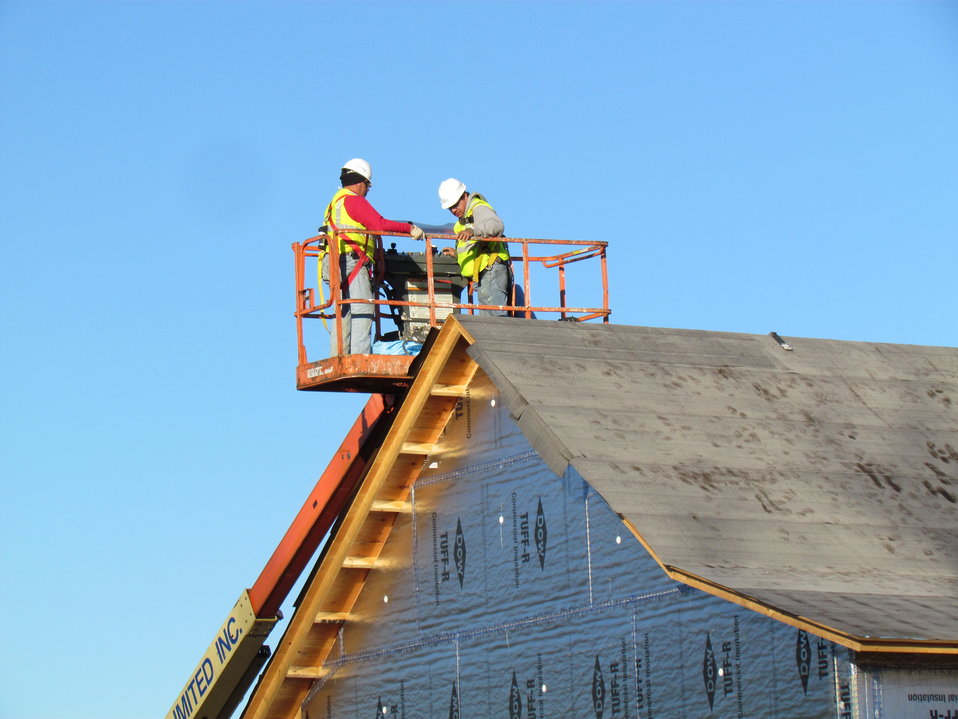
Net-Zero Energy Residential Test Facility – Work men beginning the installation of the roofing shingles on the detached garage.